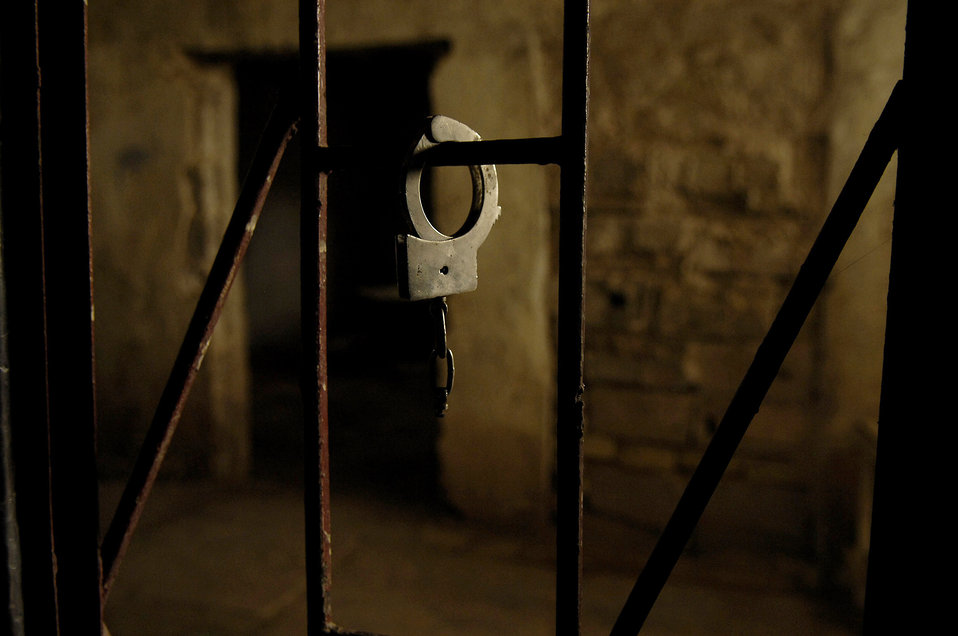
B-1B destroys al-Qaida torture compound in Iraq

A handcuff is left behind in an al-Qaida torture house and prison March 10 in northern Zambraniyah, Iraq. A B-1B Lancer destroyed the house and prison with six guided bomb unit-38 Joint Direct Attack Munitions.